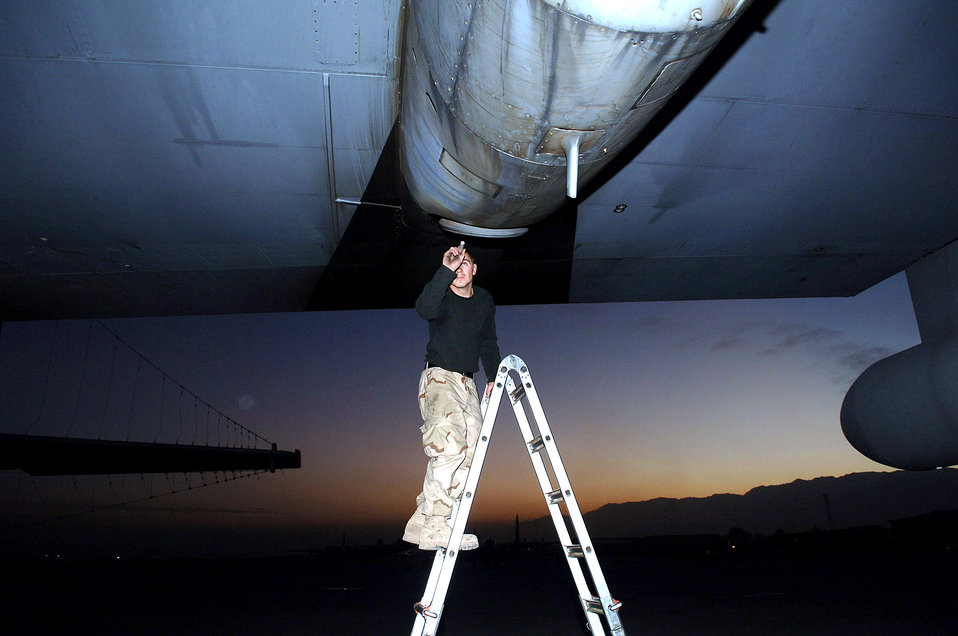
Looking for the

BAGRAM AIR BASE, Afghanistan (AFPN) -- Senior Airman Adam Davis inspects an EC-130H Compass Call's engine intakes and exhaust ports for cracks and debris damage before a combat sortie. In the last 18 months, the 41st Expeditionary Electronic Combat Squadron flew more than 3,000 combat flying hours--the equivalent of covering the state of Texas with electronic signals 28 times. Airman Davis deployed from Davis-Monthan Air Force Base, Ariz.